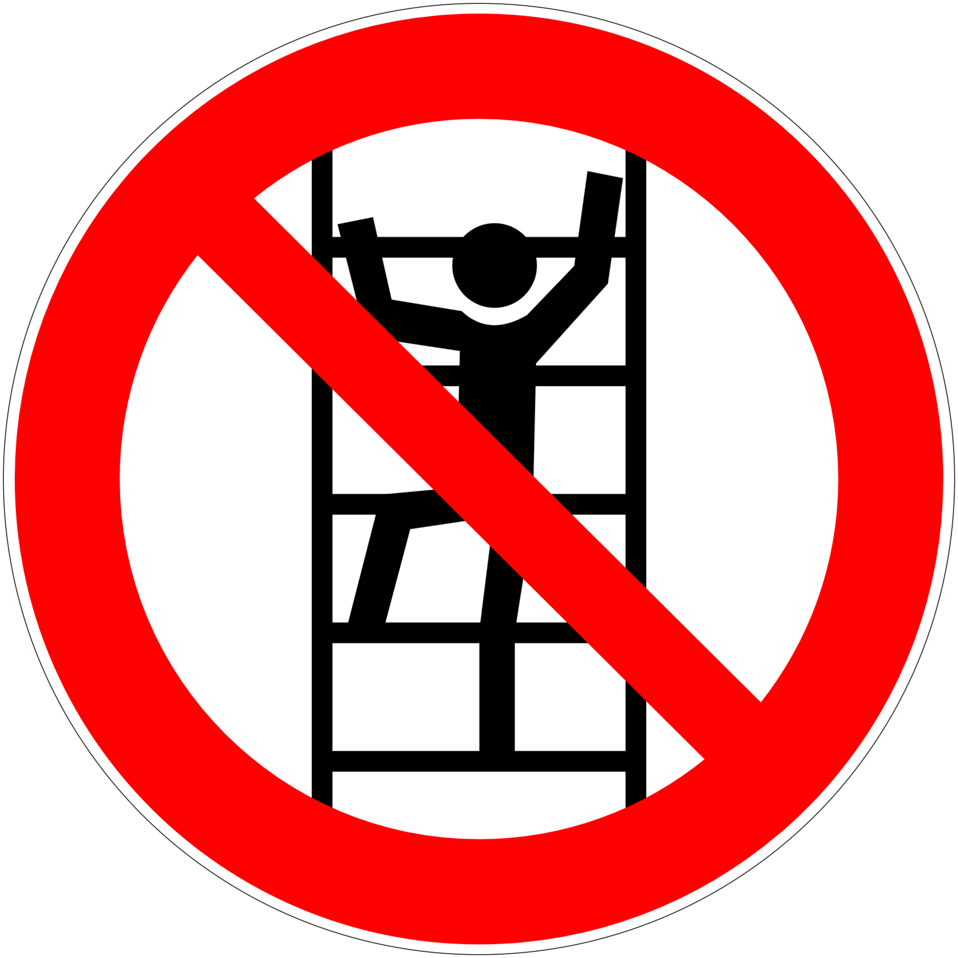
Deutsch: Besteigen für Unbefugte verboten, Verbotszeichen D-P022 nach DIN 4844-2 Do not climb unless authorised, prohibition sign D-P022 according to German standard DIN 4844-2